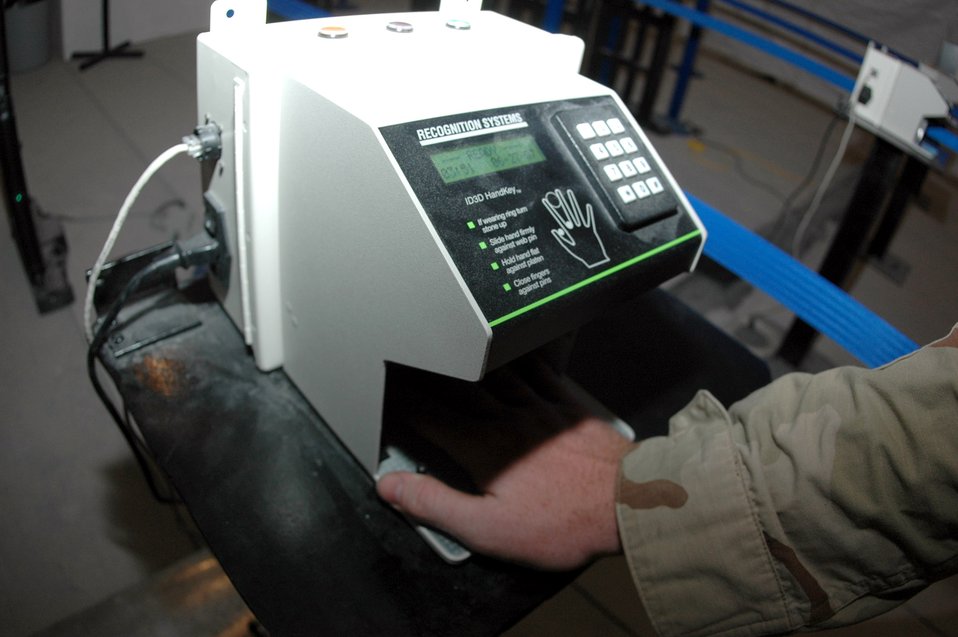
Biometric database offers tighter security

A Defense Biometric Identification Database System has been installed at a base in Southwest Asia to help make operations there safer and more secure. The new system allows for tighter security while processing people on and off base more quickly.